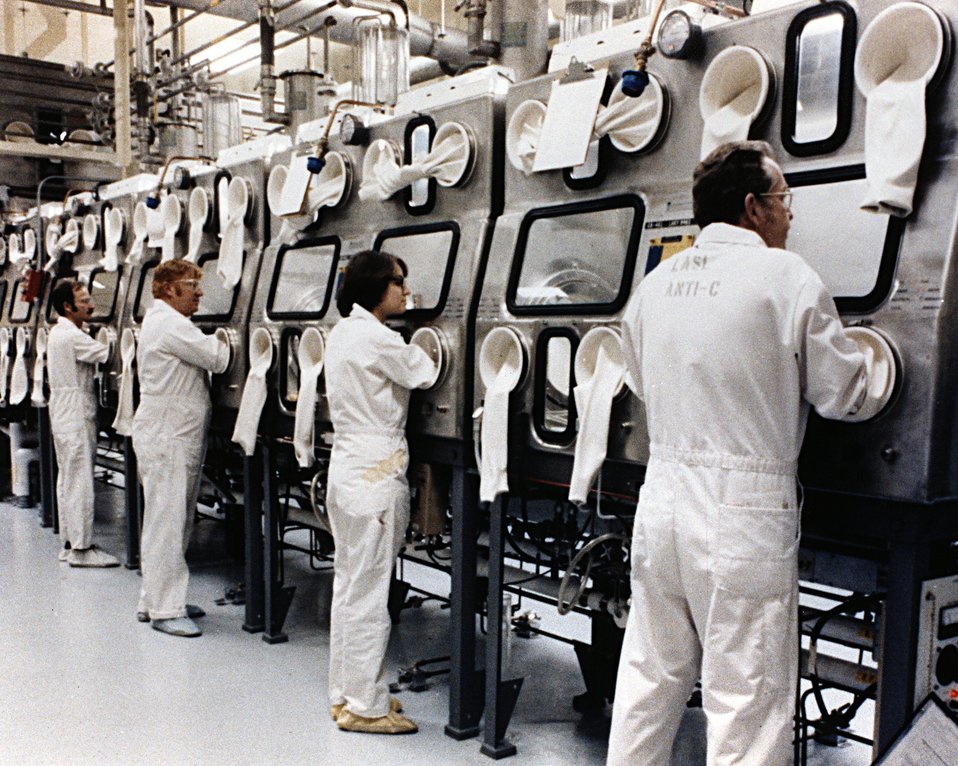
OVERALL VIEW OF GLOVE BOX ROOM.

THE GLOVE BOXES HAVE BOLT-ON, VACUUM-TIGHT WINDOWS THAT HAVE LEAD RADIATION SHIELDS BETWEEN THE GLOVE PARTS. INERT PURIFICATION/RE-CIRCULATION SYSTEMS ARE BENEATH THE GLOVE- BOXES AND THE BUBBLIER RELIEF VALVES LEADING TO THE EXHAUST PLENUM ARE ON TOP OF THE BOXES. INSIDE THE GLOVE BOXES ARE RECORDERS FOR THE CONTINUOUS ANALYSIS OF THE MOISTURE AND OXYGEN CONTENTS OF THE INTERIOR ATMOSPHERE.